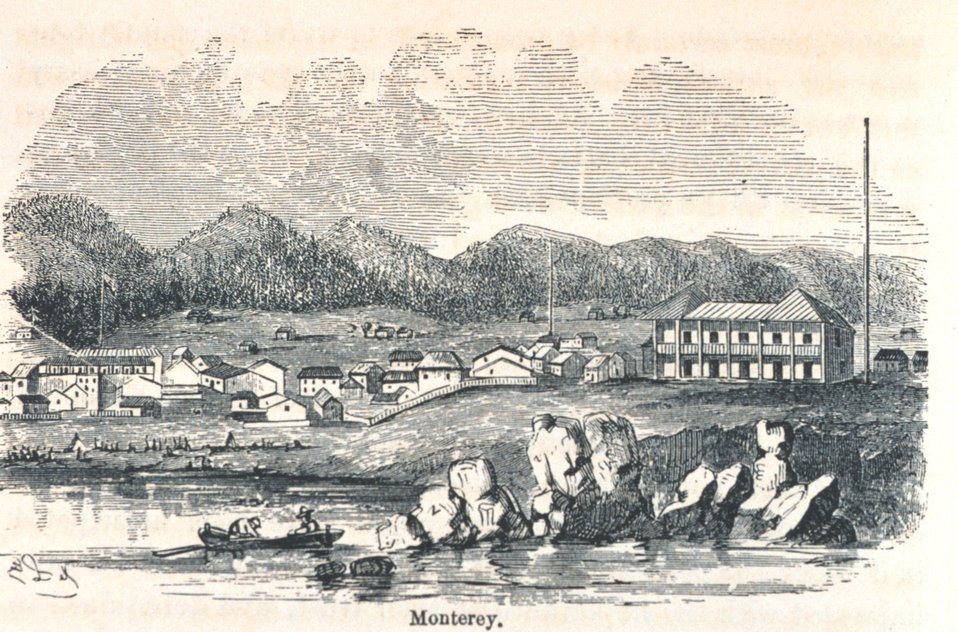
View of Monterey from offshore. The large building to the right, the Custom House, is still standing. In: 'The Annals of San Francisco'. Frank Soule, John Gihon, and James Nesbit. 1855. Page 138. D. Appleton & Company, New York. F869.S3.S7 1855.